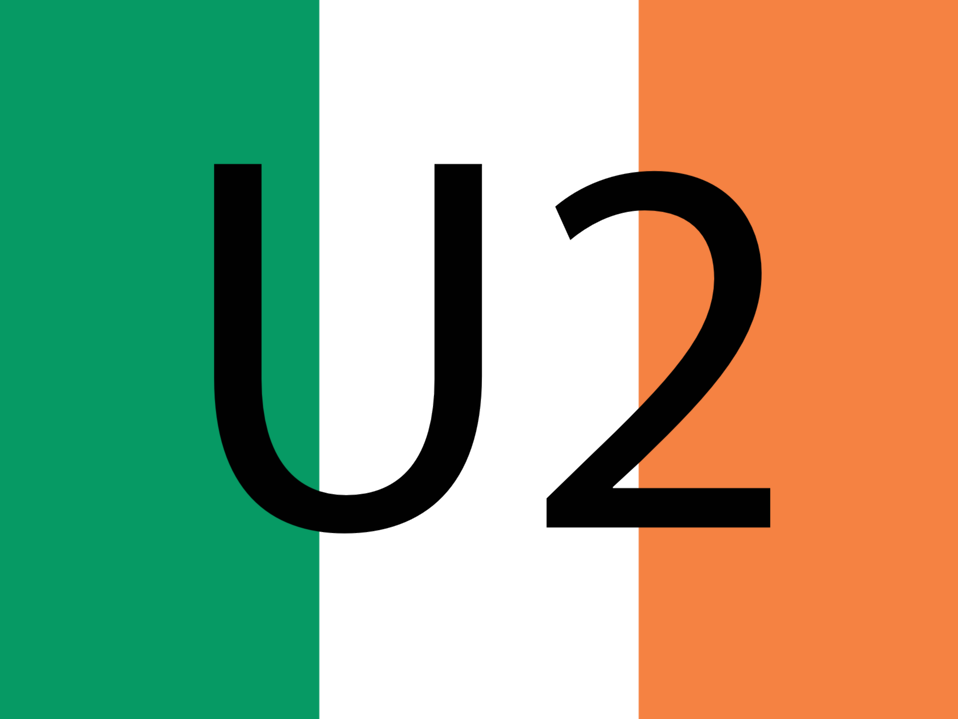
Flag of Ireland defaced with the text 'U2'.